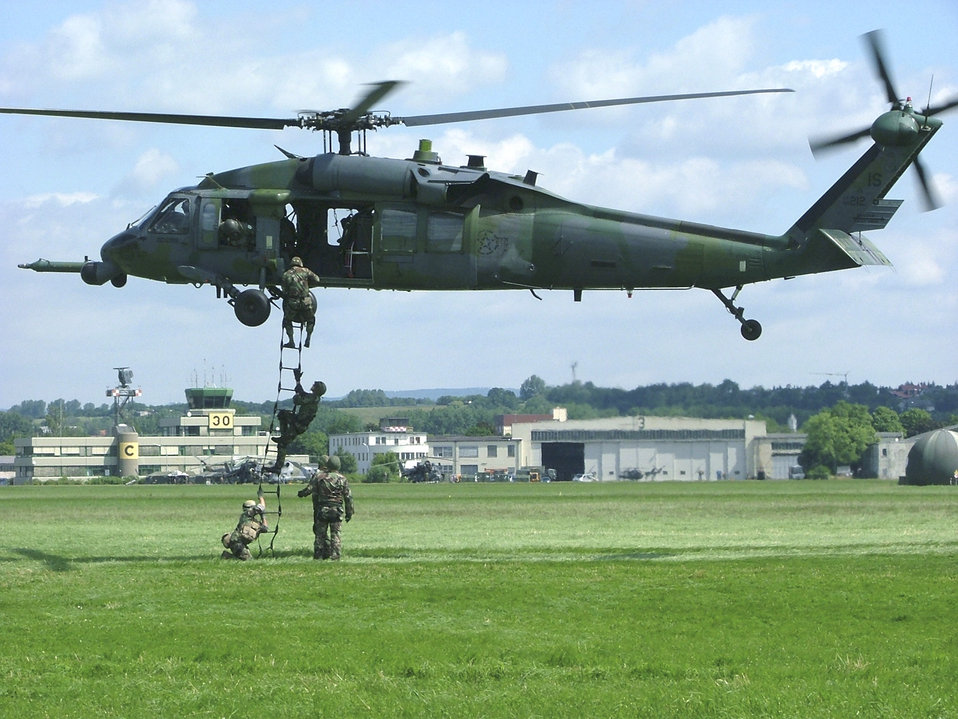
Another rescue

GEORG-FRIEDRICH KASERNE, Germany -- Airmen climb into an HH-60G Pave Hawk using a rope ladder. Airmen form the 786th Security Forces Squadron at nearby Sembach Air Base and the 56th Rescue Squadron at Naval Air Station Keflavik, Iceland, participated in NATO Operation Clean Hunter here.